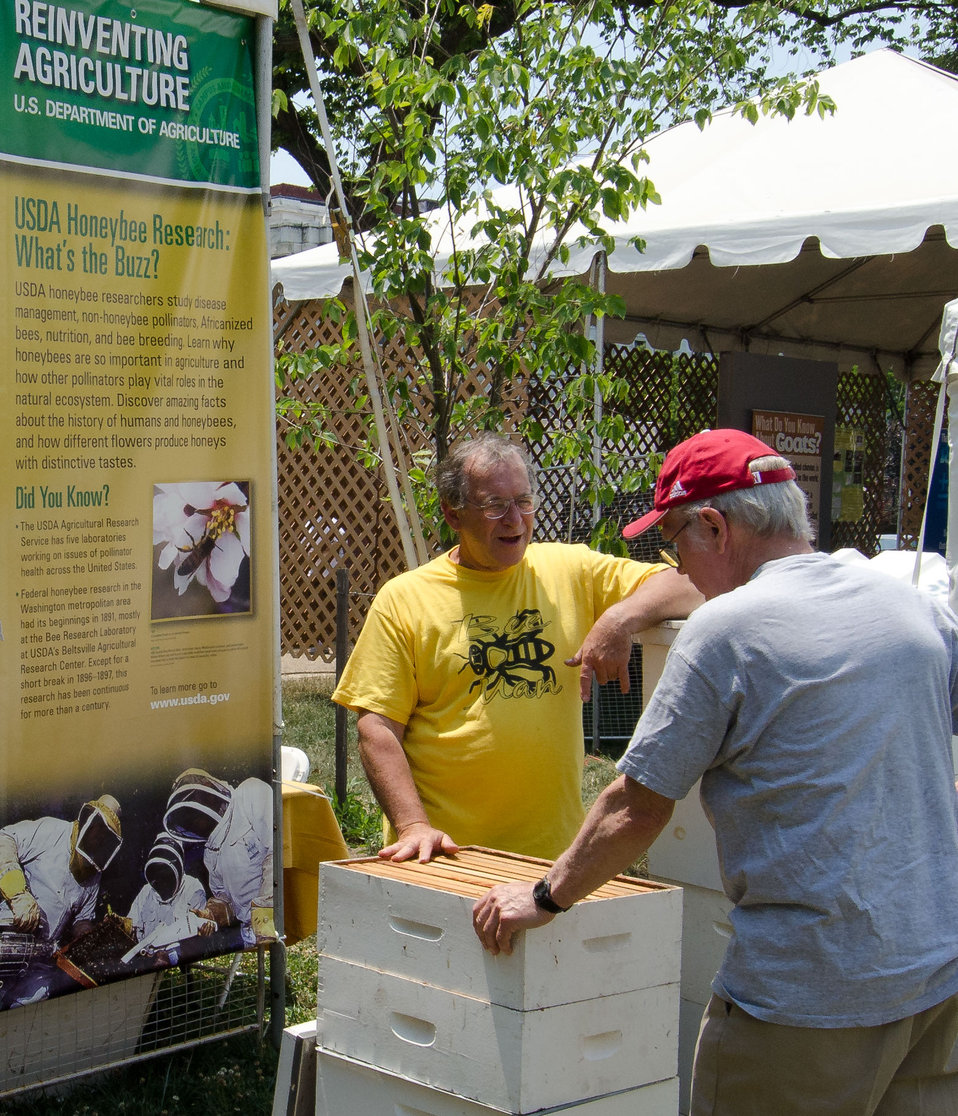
Montgomery County Beekeeper Association, amateur beekeeper Marc Hoffman, talks to a visitor about modern bee hives at 2012 Smithsonian Folklife Festival, Thursday, June 28, 2012 on the National Mall in Washington, D.C. One of the three themes this year is “Campus and Community.” It celebrates the 150 years of the USDA and the Land-Grant University System. The U.S. Department of Agriculture (USDA) and the Land-Grant system extend education across the country, contributing to American agriculture success and rural prosperity. “Campus and Community” has demonstrations, discussions, hands-on activities, and entertainment to that showcase the many ways that this partnership works to improve American agriculture and rural life.